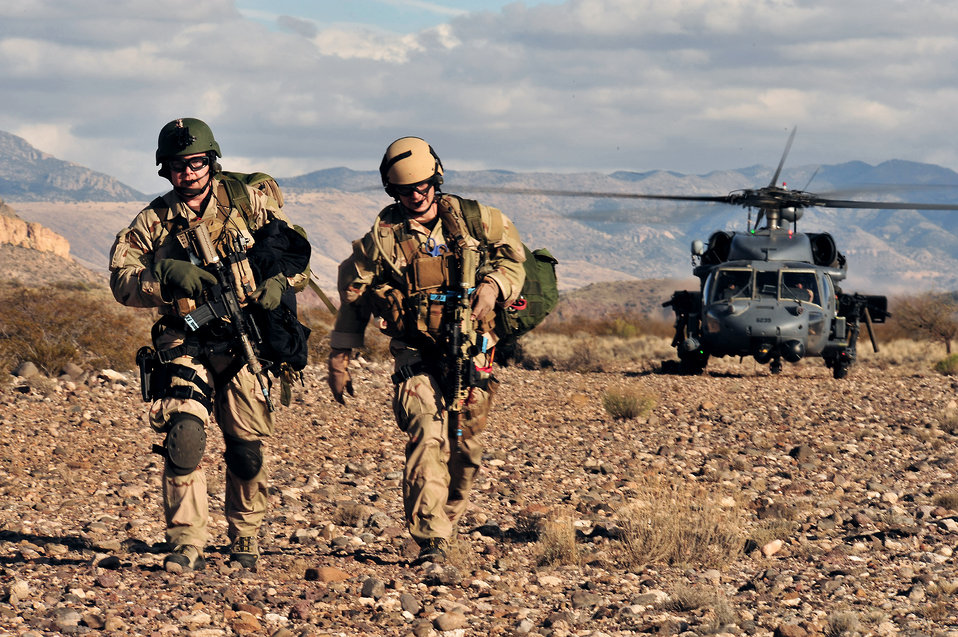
Multinational recovery exercise kicks off at Davis-Monthan

Two Air Force pararescuemen depart from a HH-60G Pave Hawk to aid casualties during a personnel recovery training exercise Dec. 7 at Davis-Monthan Air Force Base, Ariz.. More than 800 ground recovery personnel took part in Angel Thunder 2008, a combat search and rescue exercise.